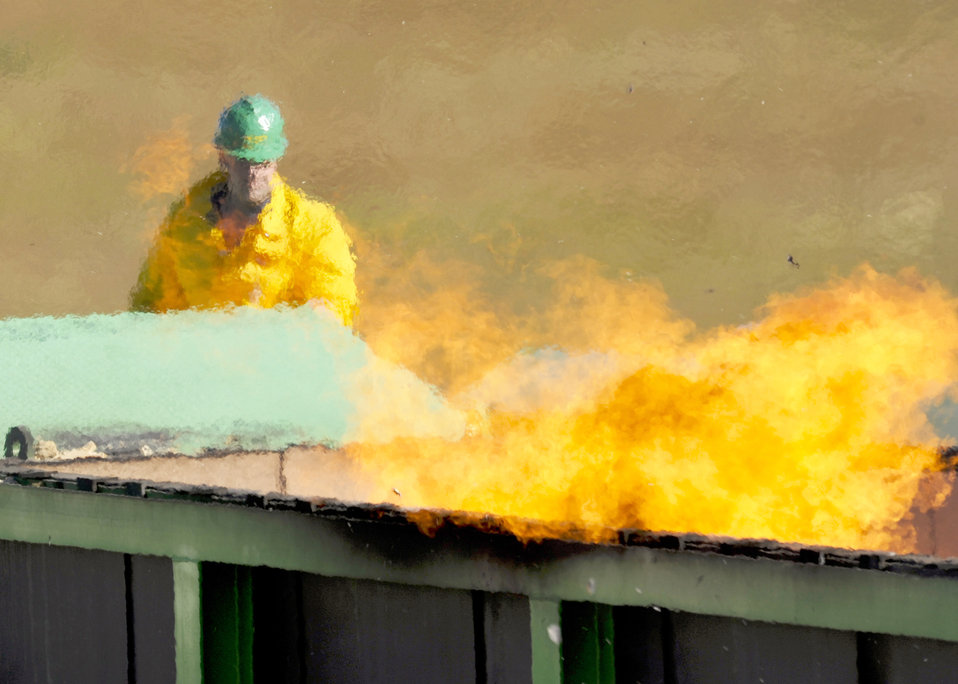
Air burners at Eglin

Matt O'Conner watches the flames inside the 46th Test Wing's new air curtain incinerator after another load of particle board was placed inside Oct. 31, 2010, at Eglin Air Force Base, Fla. Mr. O'Conner, a sales manager with Air Burners, adjusted the flow of air over the top of the burner to control the flames based on the wind and amount being burnt.